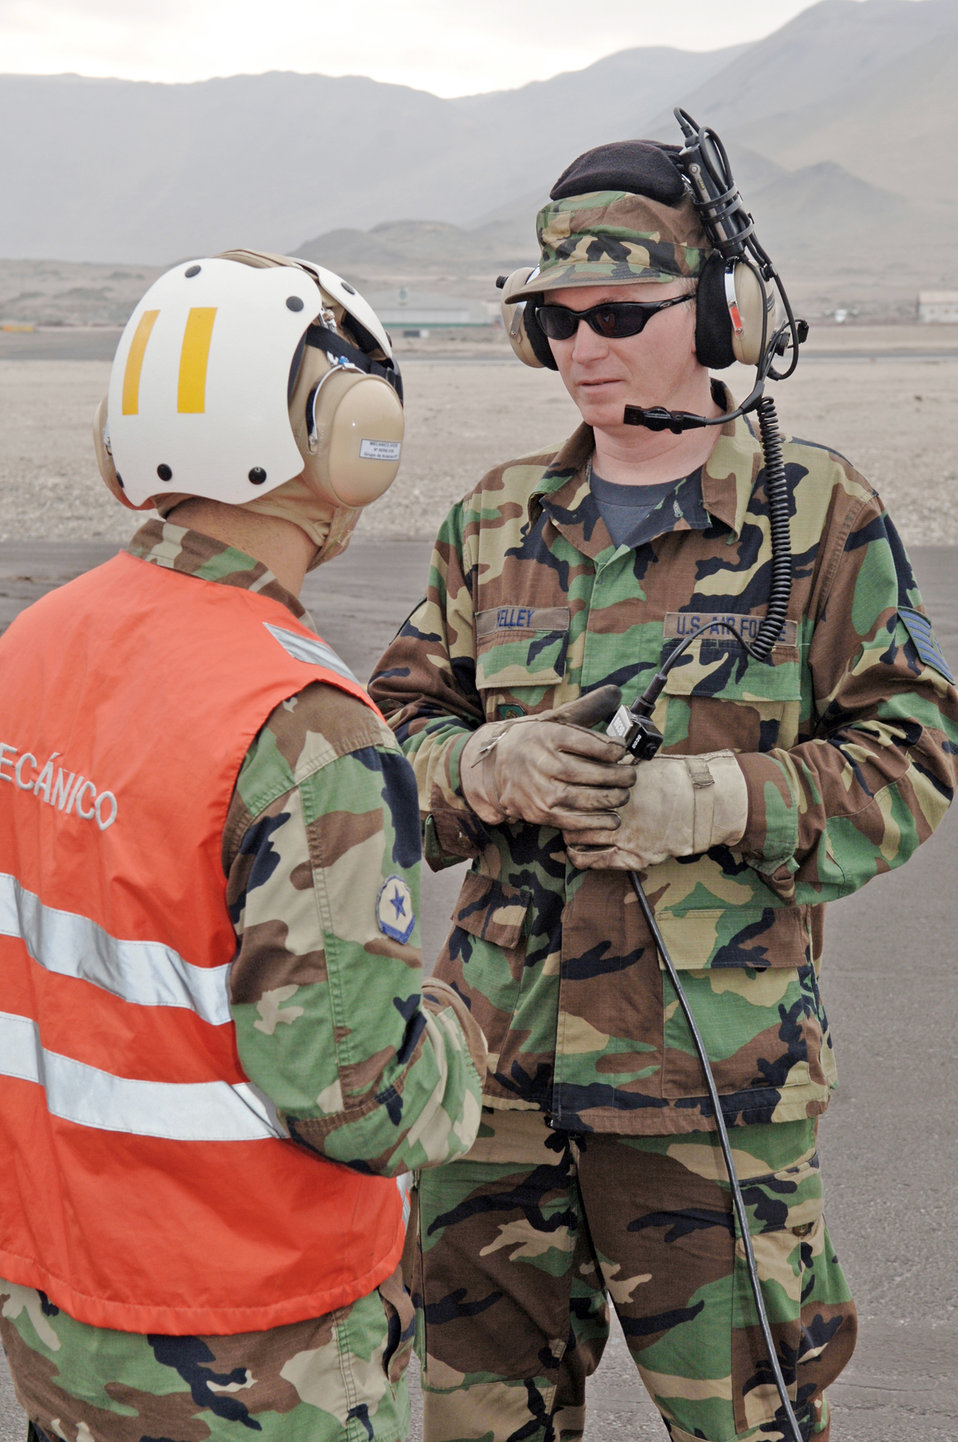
Chile, U.S. aircraft maintainers find common ground in profession of arms

Tech. Sgt. BJ Kelley talks with a Chilean air force maintainer before launching a KC-135 Stratotanker during Salitre, a multinational exercise focused on interoperability between servicemembers from Chile, the United States, Argentina, Brazil and France. Sergeant Kelley is a crew chief from the 161st Air Refueling Wing.